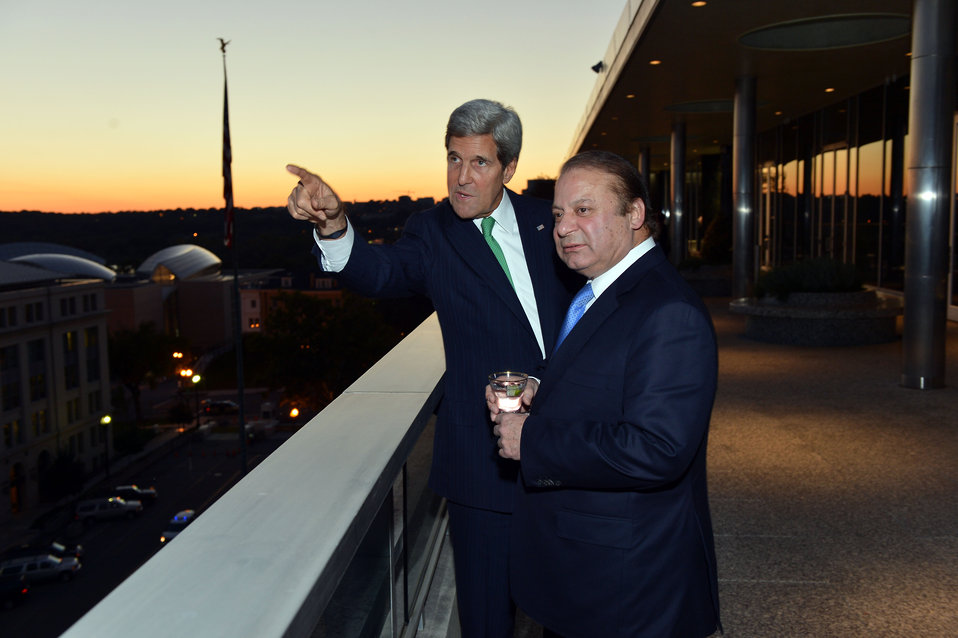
Secretary Kerry and Pakistani Prime Minister Sharif Look at the Monuments

U.S. Secretary of State John Kerry points out historic monuments along the National Mall to Pakistani Prime Minister Nawaz Sharif after their bilateral meeting at the U.S. Department of State in Washington, D.C., on October 20, 2013.